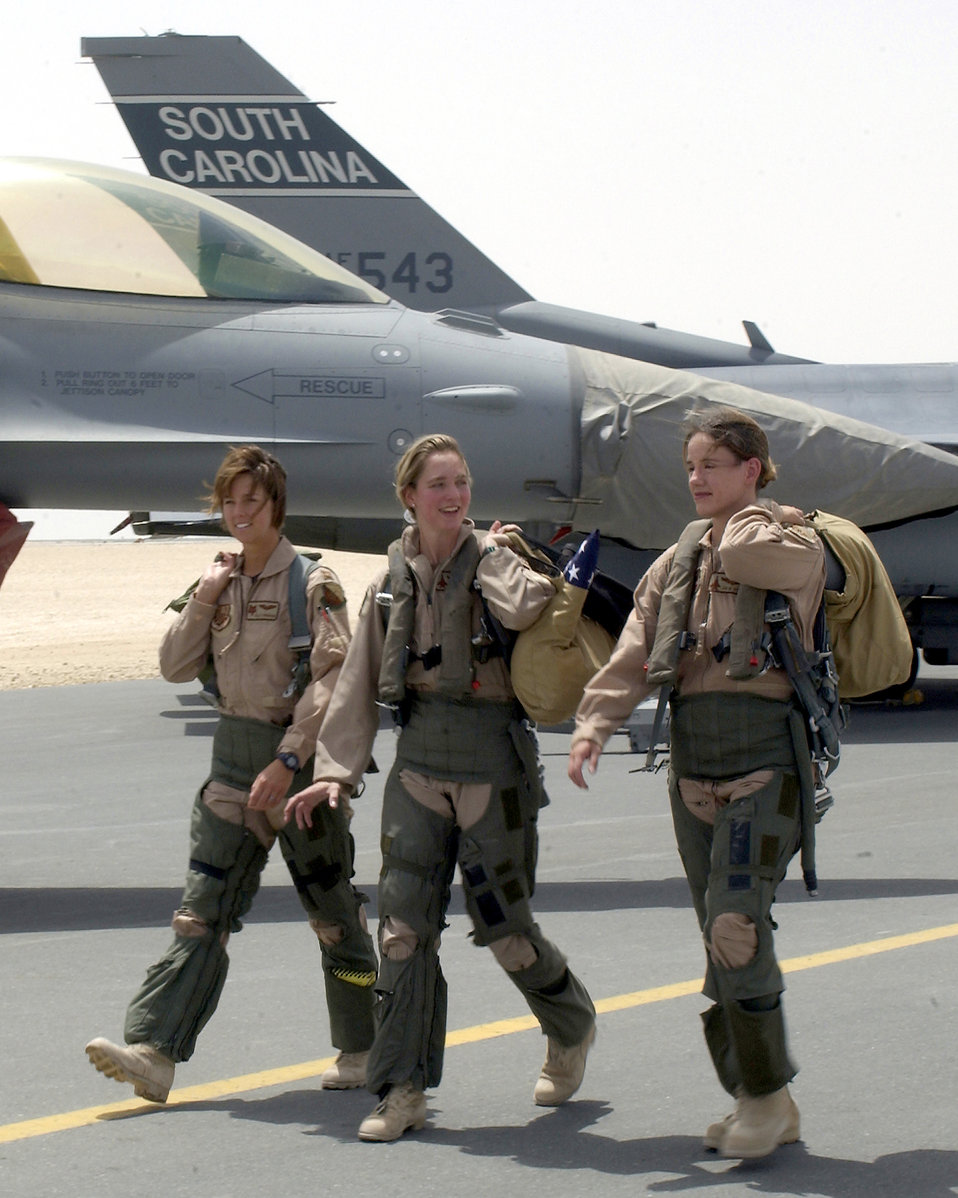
Triple threat

OPERATION IRAQI FREEDOM (AFPN) -- From left to right, Capts. Tally Parham and Mary Melfi and 1st Lt. Julie Ayres walk down the flightline at a forward-deployed air base in the Middle East on May 3. The three officers are assigned to the 379th Air Expeditionary Wing and flew combat missions during Operation Iraqi Freedom. Ayres and Melfi are F-15E Strike Eagle weapons system officers deployed from the 336th Expeditionary Fighter Squadron at Seymour Johnson Air Force Base, N.C. Parham is an F-16 Fighting Falcon pilot from the 157th Expeditionary Fighter Squadron from the South Carolina Air National Guard at McEntire Air National Guard Base.